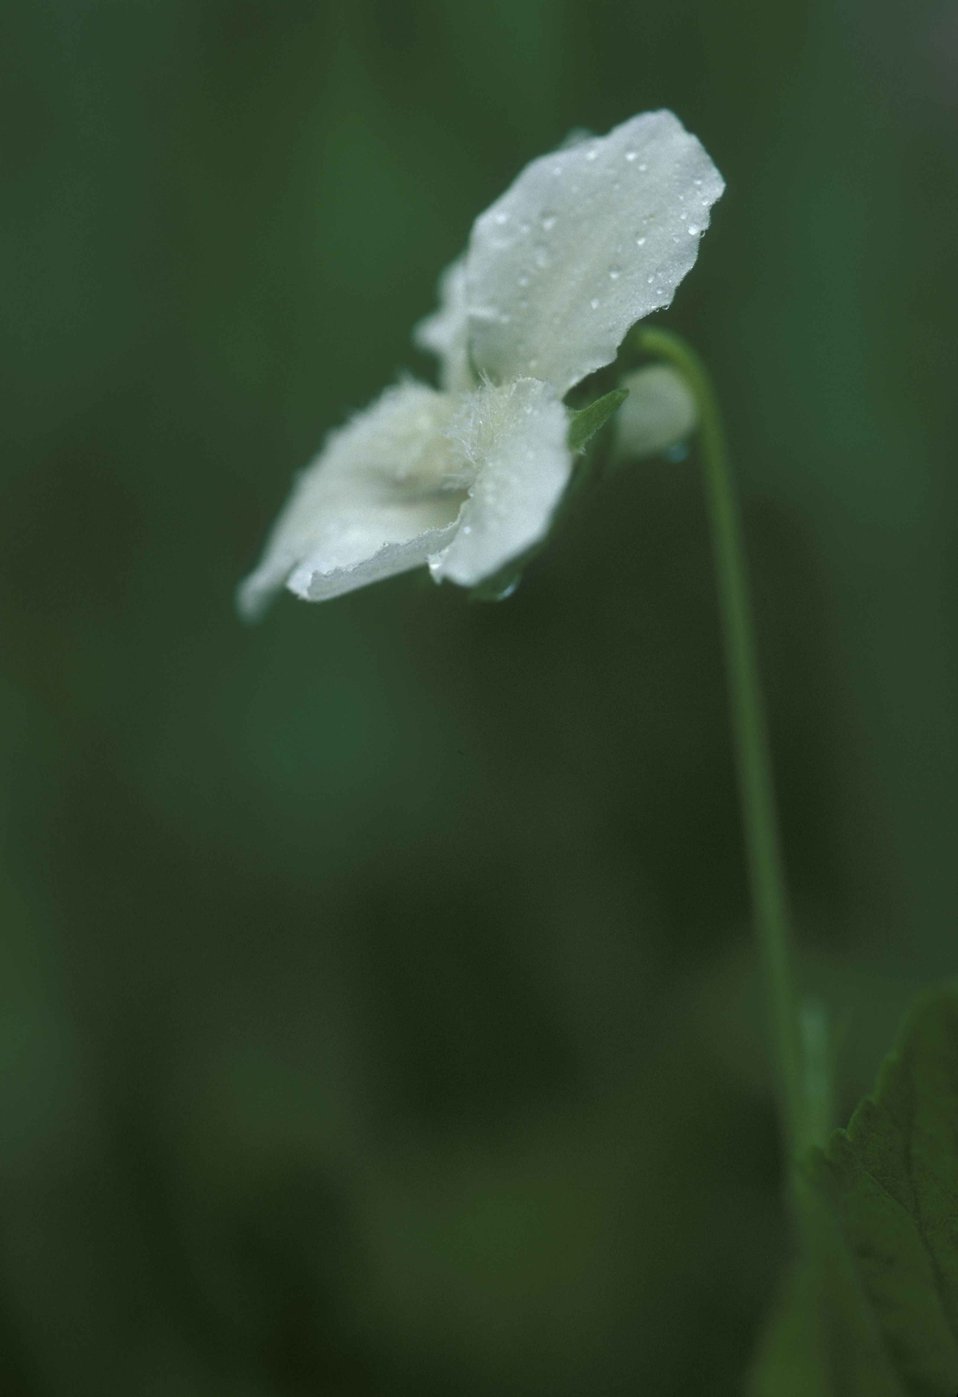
English:
Image title: A close up view of a white violet in bloom Image from Public domain images website, http://www.public-domain-image.com/full-image/flora-plants-public-domain-images-pictures/flowers-public-domain-images-pictures/wildflowers-pictures/a-close-up-view-of-a-white-violet-in-bloom.jpg.html